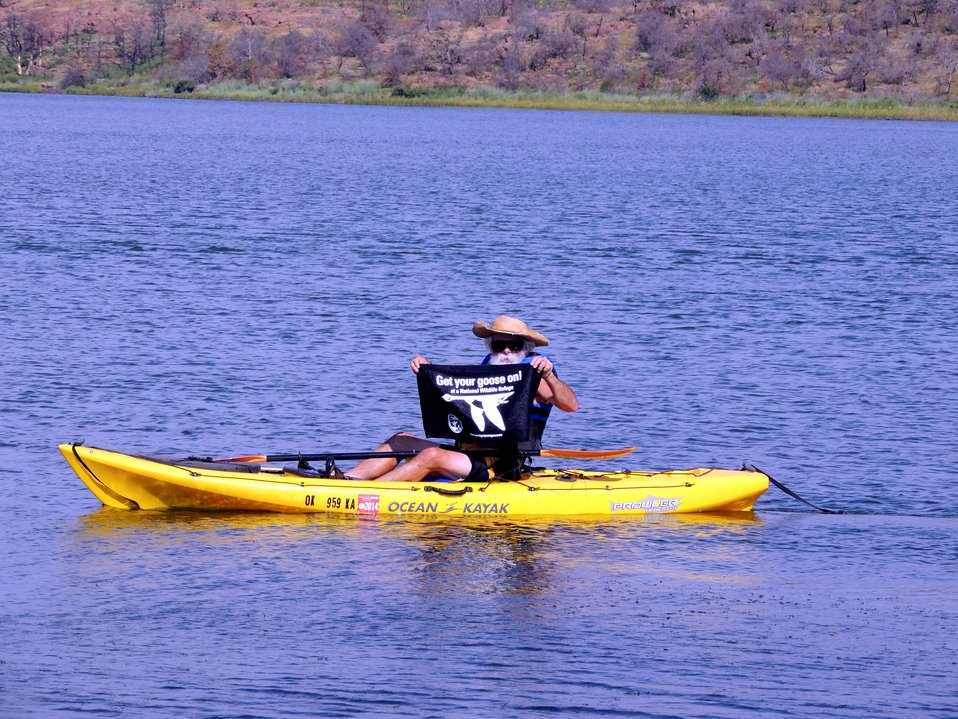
Get Your Goose On!

Wichita Mountains National Wildlife Refuge in Oklahoma.